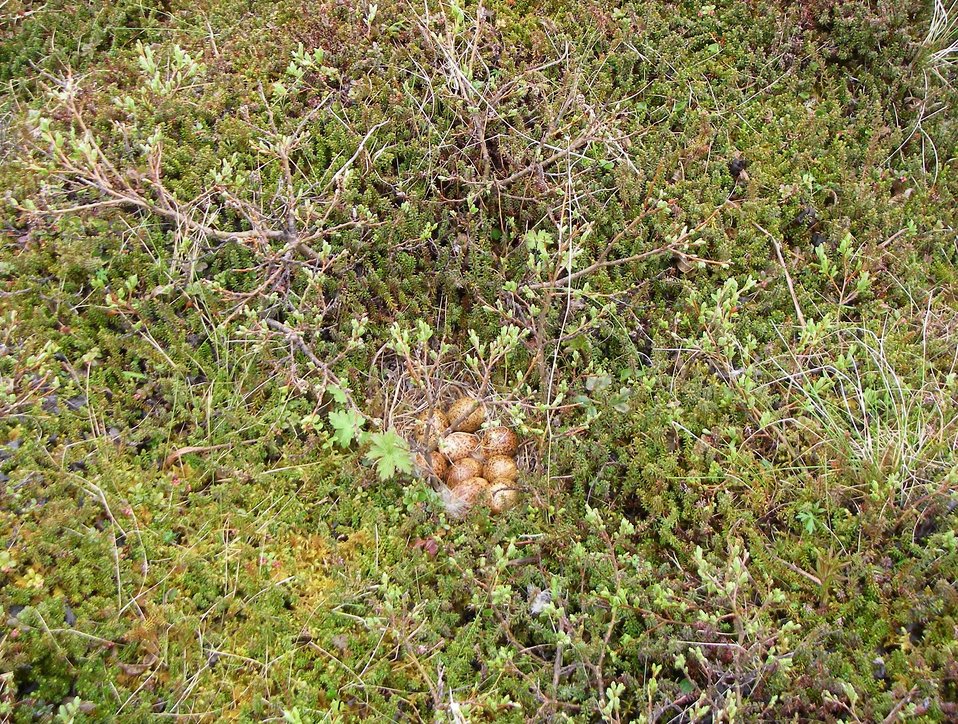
Willow Ptarmigan nest

north of Kinzarof Lagoon, Izembek National Wildlife Refuge